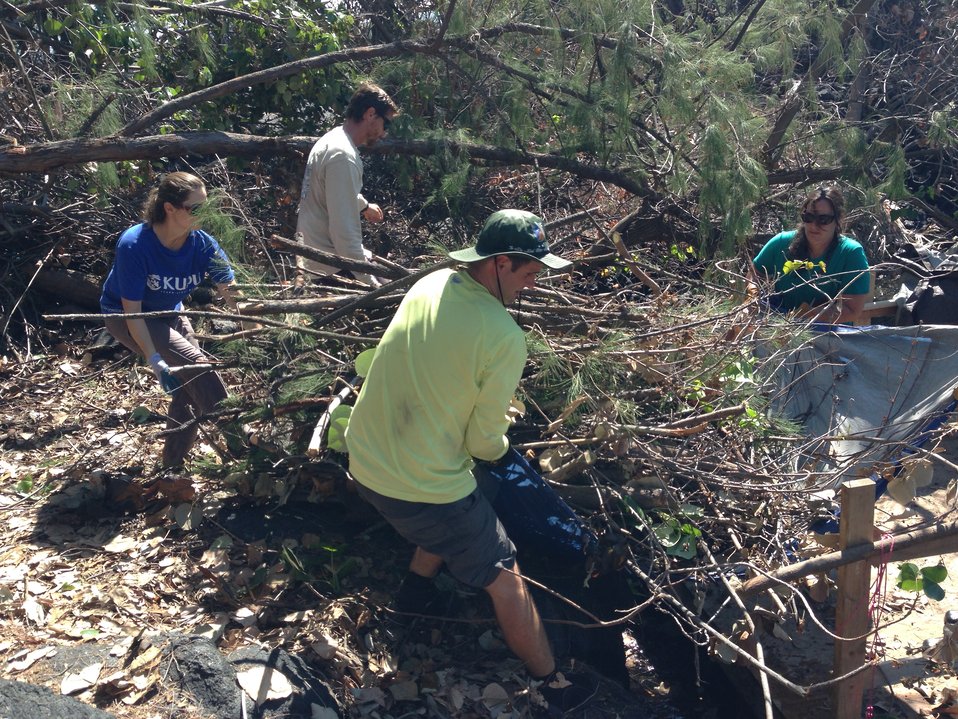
Kiholo2

Staff from the Institute of Pacific Islands Forestry, The Nature Conservancy and Hawaii’s Division of Forestry and Wildlife haul a tarp loaded with debris onto the raft as part of the restoration efforts at the Kiholo ponds.